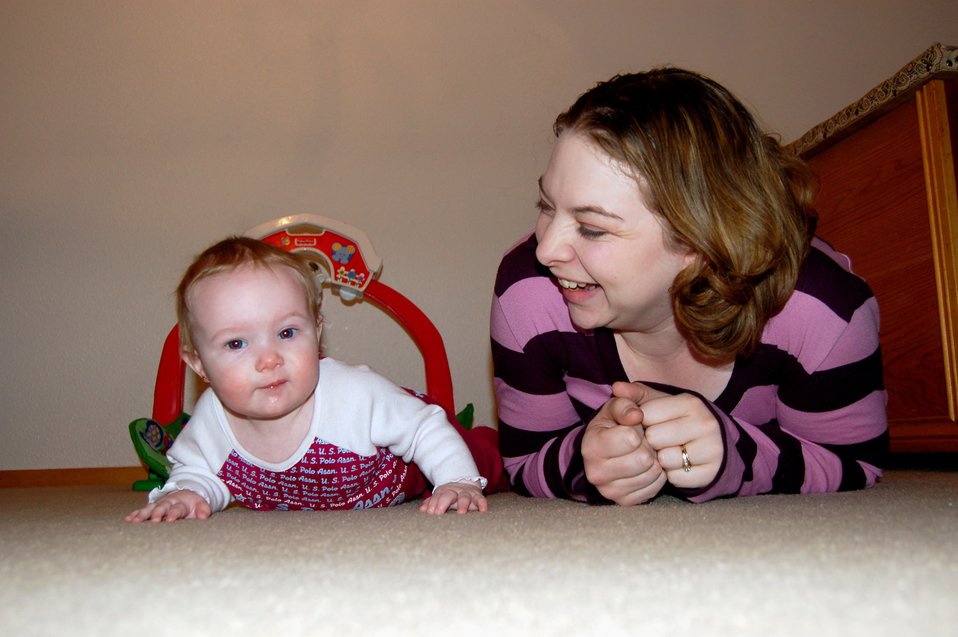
Eielson helps Airmen move into new homes in a hurry

Jamie Bridges crawls with her 8-month-old daughter, Lily, in their new home in base housing Feb. 27 at Eielson Air Force Base, Alaska. They were one of 300 families living in the Sprucewood Homes edition of the base's privatized housing. The Bridges and other Air Force families had to be moved out of the privatized housing into new housing from September to December. The reason for the move was due to a conclusion of a privatized housing contract that wasn't able to be renegotiated.